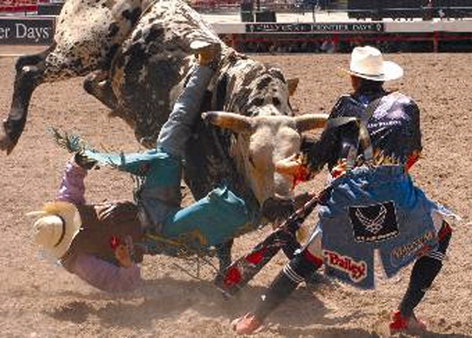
Bull rider

CHEYENNE, Wyo. -- First Lt. Jeremy Sparks (right) moves in to protect a bull rider Aug. 1 at Cheyenne Frontier Days. The lieutenant helped protect more than 1,500 contestants during the world's largest outdoor rodeo. He is a missileer with the 90th Space Wing at F. E. Warren Air Force Base, Wyo.